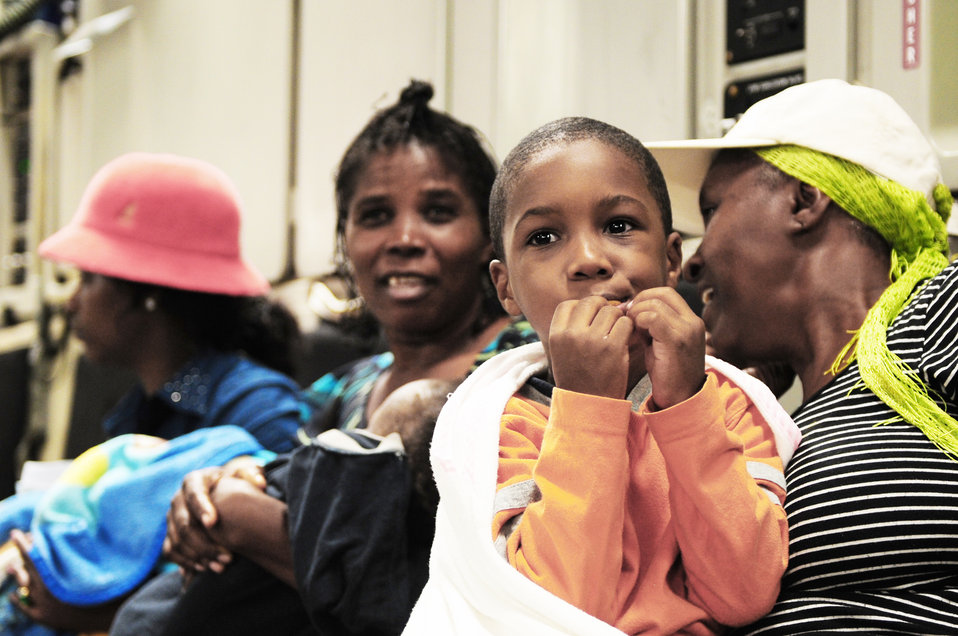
Haiti Earthquake Relief

Haitian-Americans fly on a C-17 Globemaster III Jan. 18, 2010, from Toussaint L'Ouverture International Airport in Port-au-Prince, Haiti to Orlando Sanford International Airport, Fla. The C-17 crew is assigned to the 729th Airlift Squadron at March Air Reserve Base, Calif. The aircraft is from the 452nd Air Mobility Wing at March ARB.